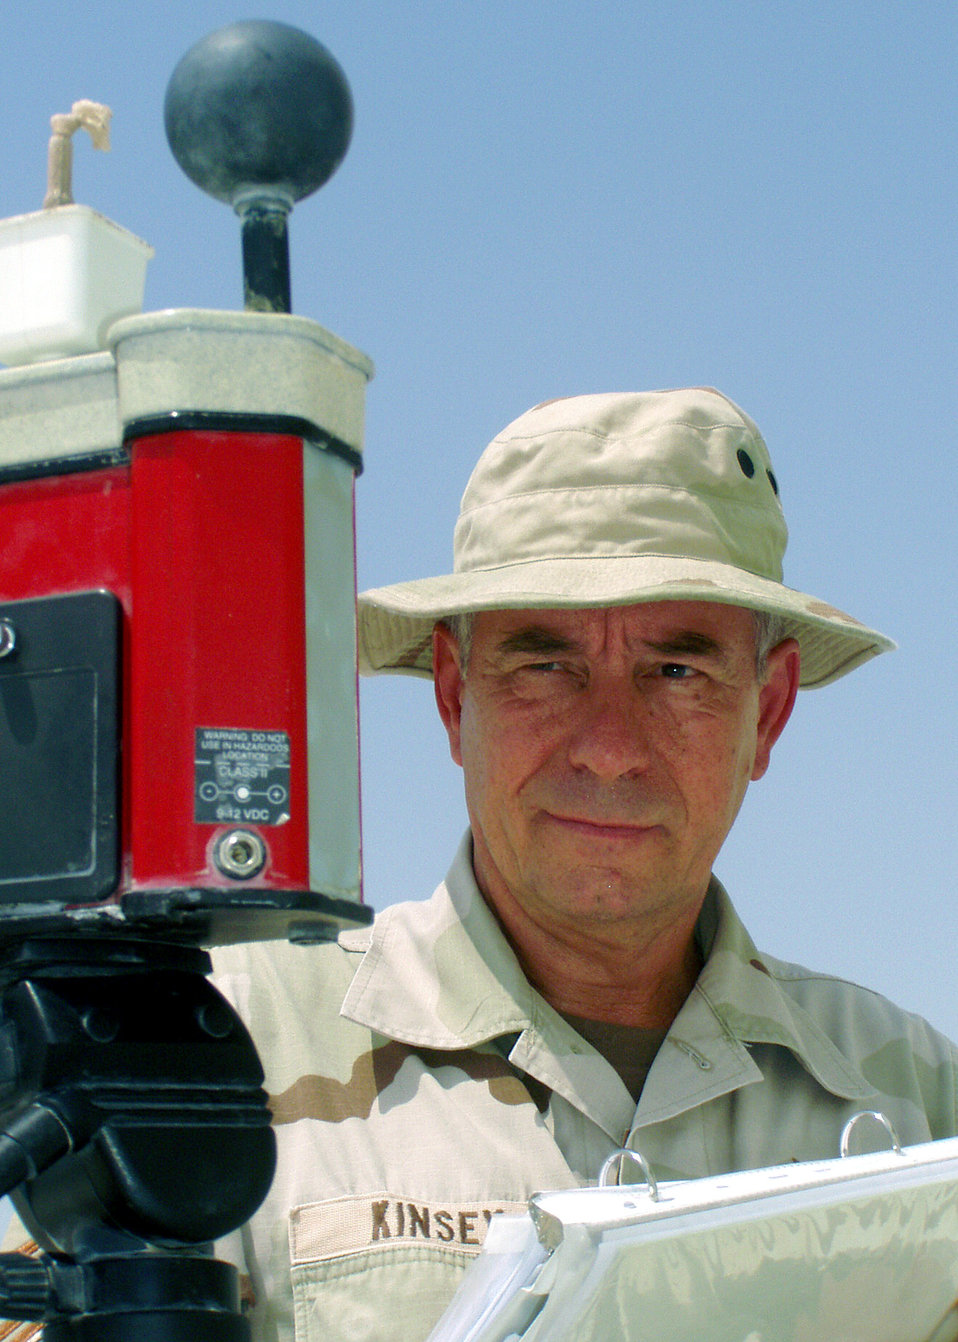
Yep, it's hot

SOUTHWEST ASIA -- Master Sgt. Jim Kinsey reads an environmental monitor that measures an